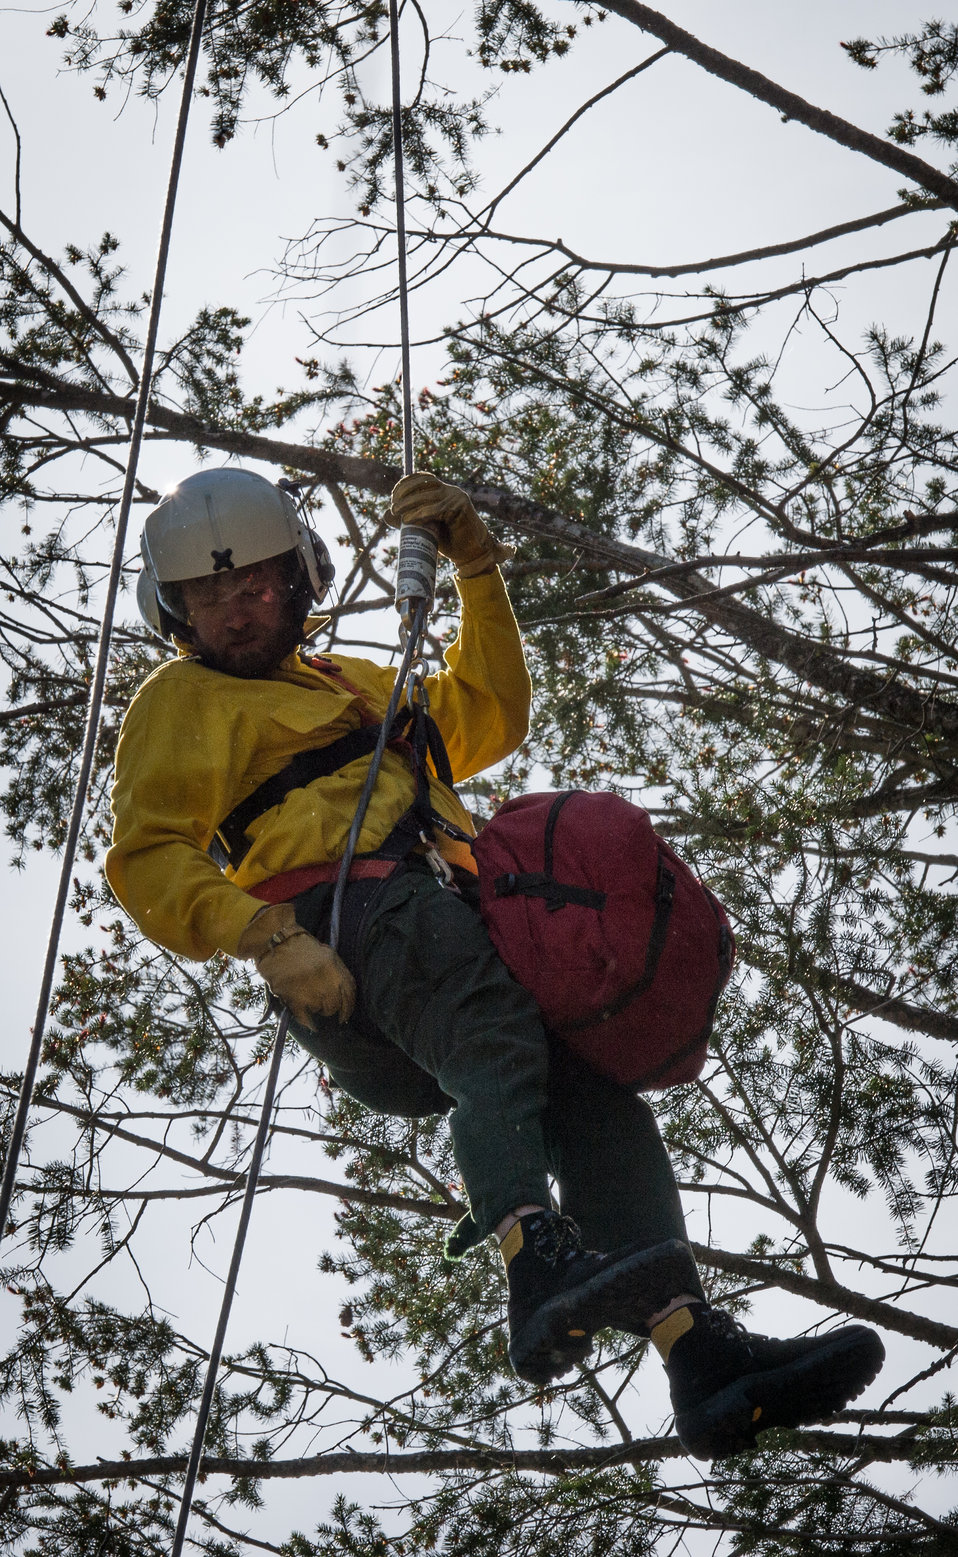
Veteran wildland firefighter rappellers use various techniques to negotiate the wind from the helicopter rotor blades above them, and away from tree branches, beside and below, as they perform a controlled and safe descent at the U.S. Department of Agriculture (USDA) U.S. Forest Service (USFS) National Helicopter Rappel Program’s Rappel Academy at Salmon Air Base in Salmon, ID on Thursday, May 15, 2014. From May 12, 2014, 72 veteran rappellers from all over the nation, 30 support staff, and three helicopters with flight crews attend the training at Salmon Air Base. Participants will rappel into the Perreau Creek area. The annual training is delivered in accordance with the National Rappel Operations Guide; strengthen leadership, teamwork, and communications within the rappel community, and produces quality aerial delivered firefighters for use in fire and aviation operations. The USDA Forest Service National Helicopter Rappel Program’s primary mission is initial attack. Rappel crews may be utilized for large fire support, all hazard incident operations, and resource management objectives.